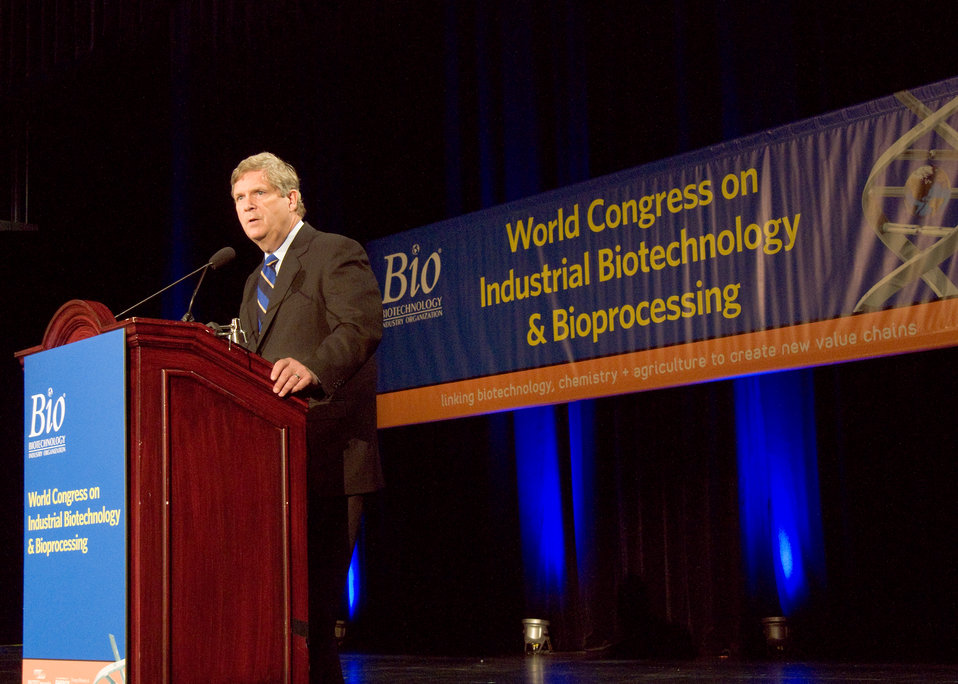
Agriculture Secretary Tom Vilsack spoke at the plenary general session, “The Marriage of Industrial and Agricultural” at the Bio – Biotechnology Industry Organization sponsored by The World Congress on Industrial Biotechnology and Bioprocessing at the National Harbor, DC on Tuesday, June 29, 2010. Secretary Vilsack discussed the partnership and cooperation of the federal government and private industry in developing biotechnology for farm, fuel and industry. USDA Photo 10di1423-047.